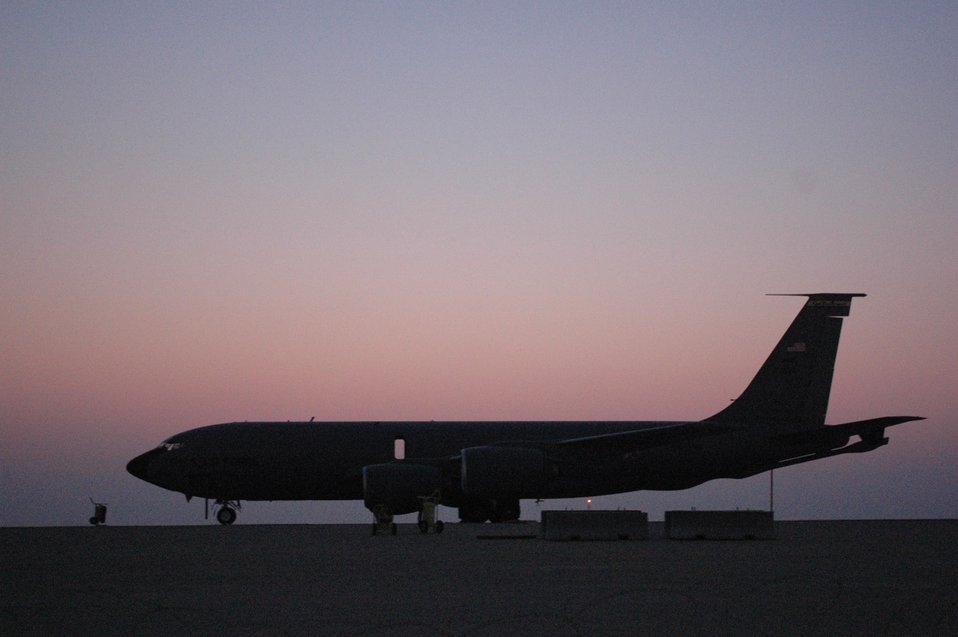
March 20 airpower summary: KC-135s provide sortie support

A KC-135 Stratotanker at a Southwest Asia air base prepares for an airlift refueling mission.